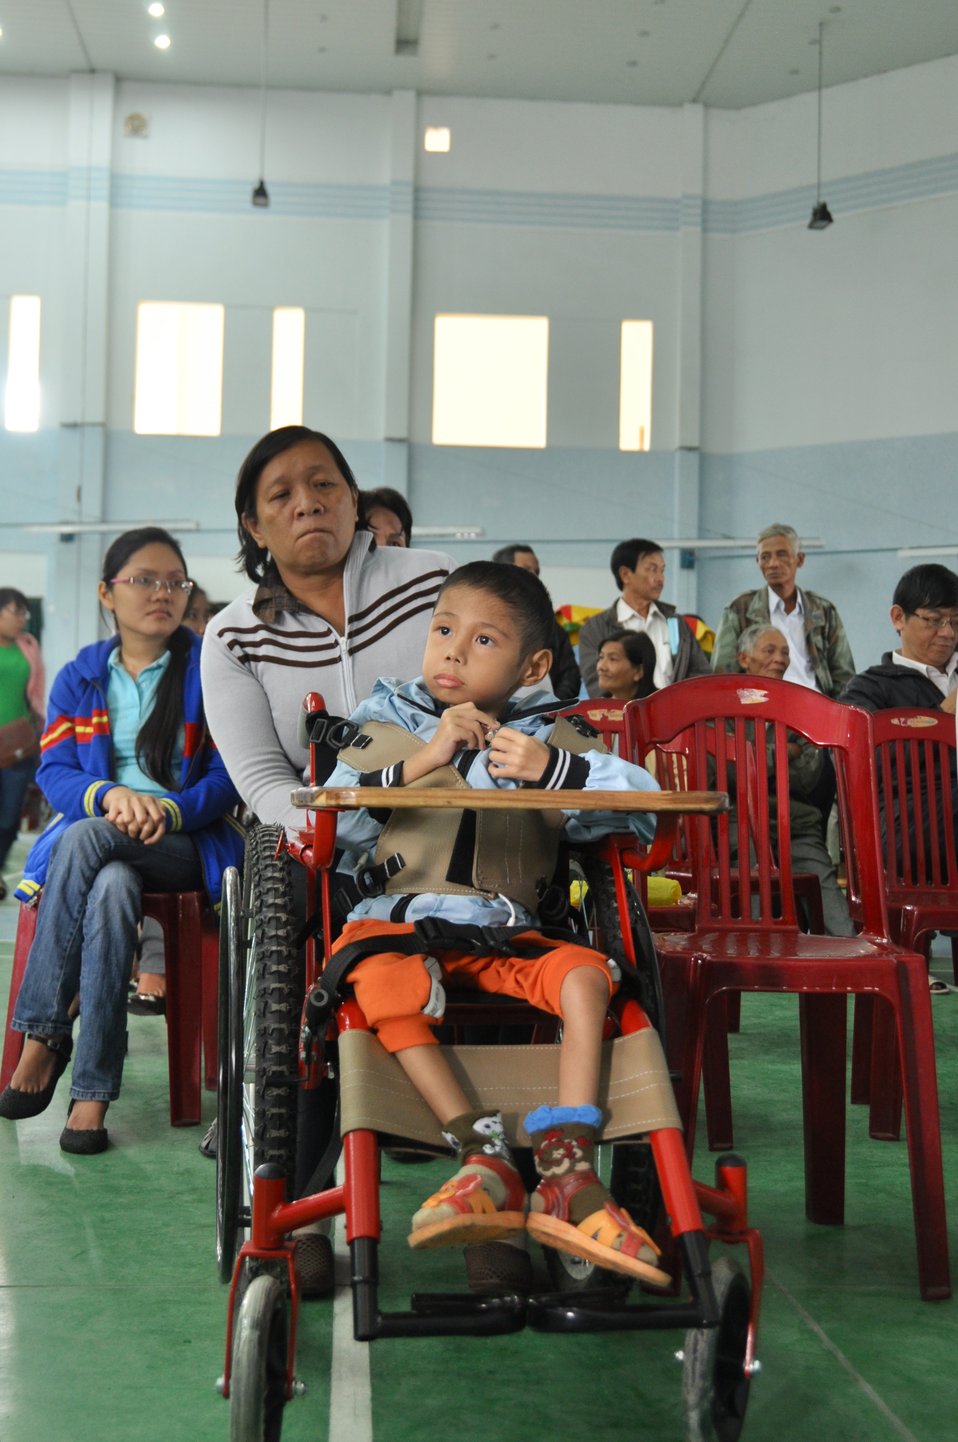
USAID supports delivery of wheelchairs to people with disabilities in Danang.

Danang, December 3, 2013.